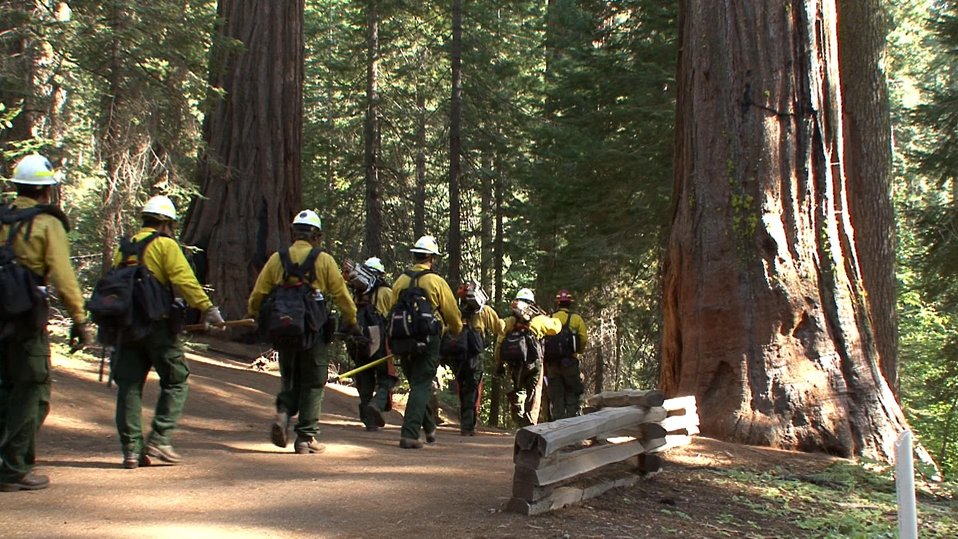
National Park Service (NPS) fire crew enters the Tuolumne Grove of Giant Sequoias to establish defensible space protecting the big trees if the Rim fire advances. The Rim Fire in the Stanislaus National Forest near in California began on Aug. 17, 2013 and is under investigation. The fire has consumed approximately 149, 780 acres and is 15% contained.